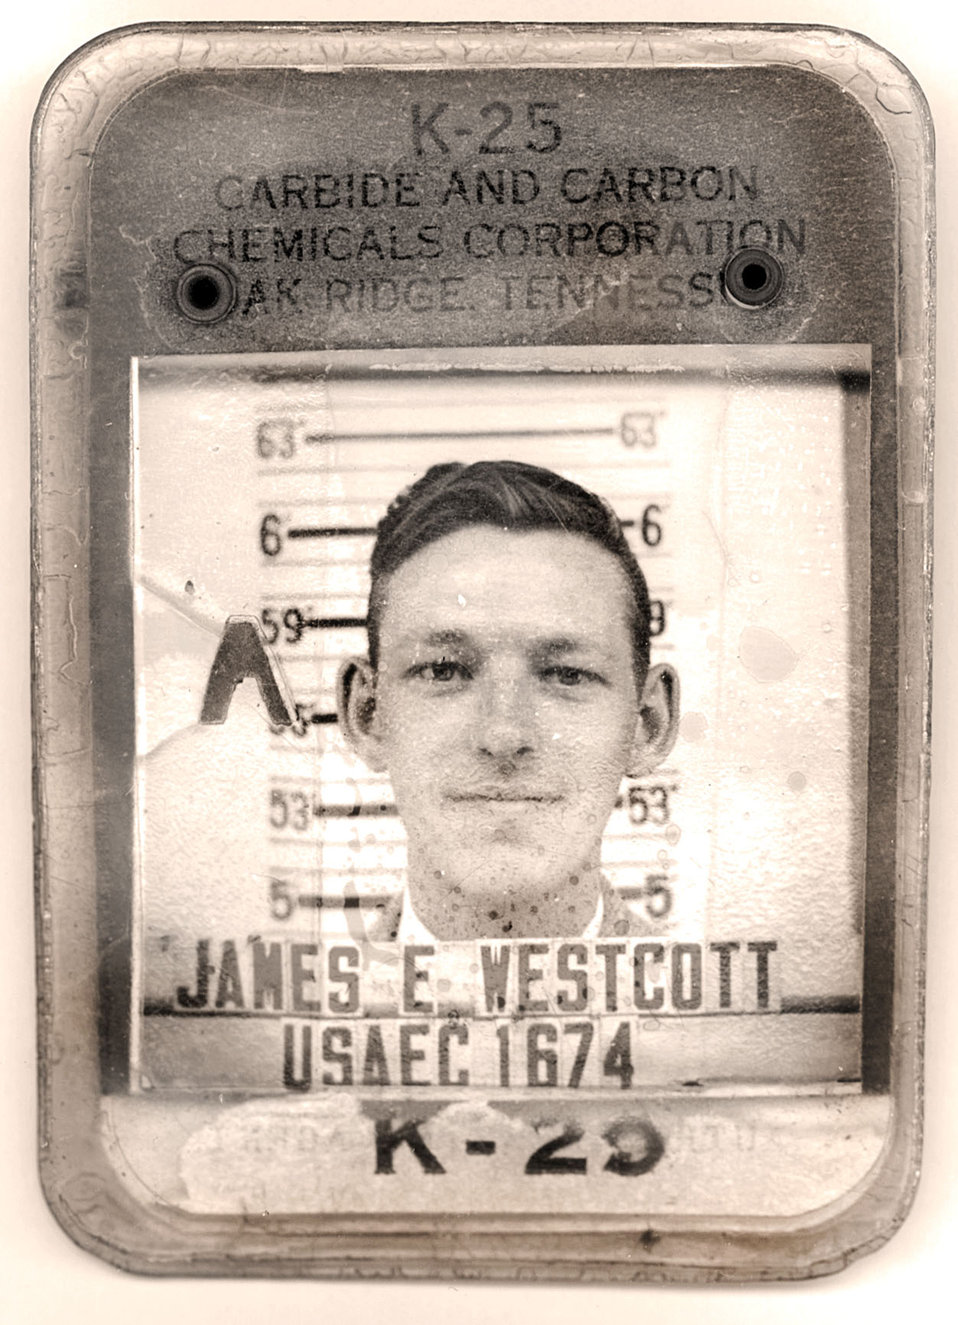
Ed Westcott's K-25 Badge 1950s